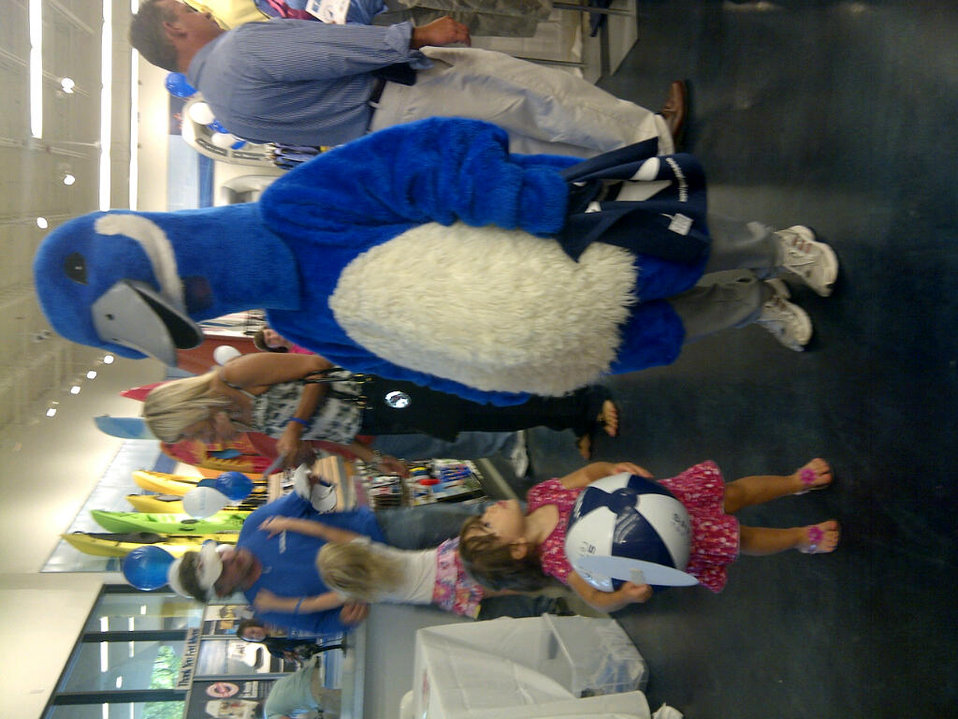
Get Your Goose On!